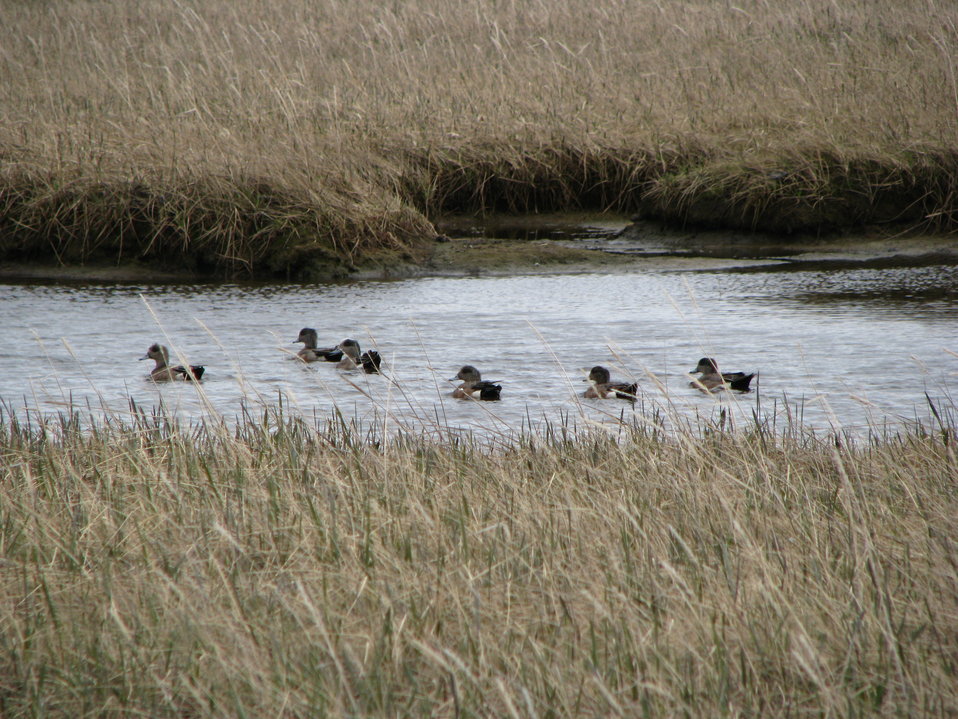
Group of Wigeon

Yukon Delta NWR